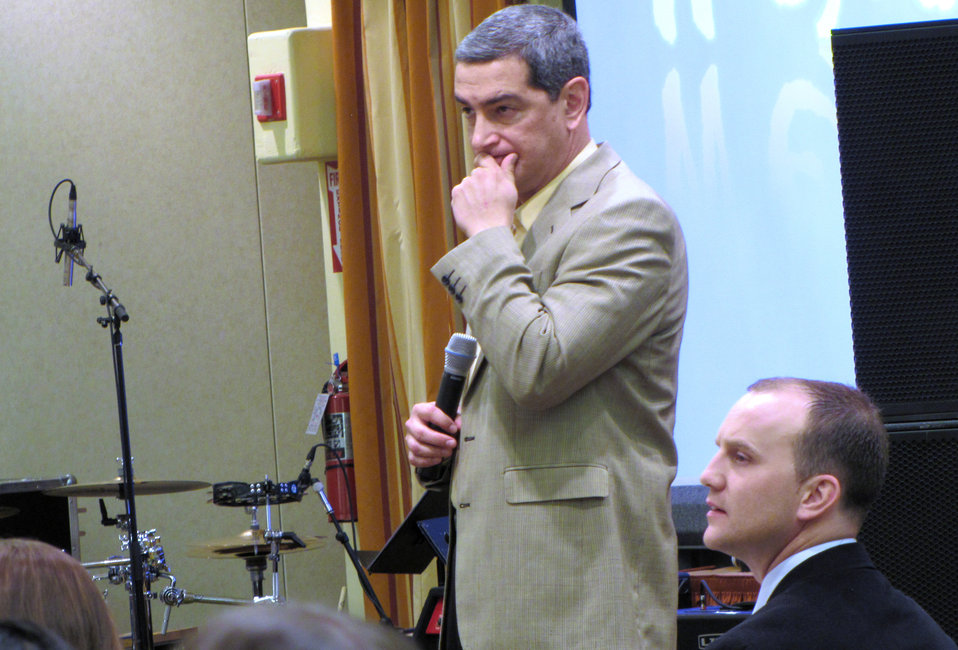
Deployers, families tackle issues in Phoenix

Maj. Gen. Kelly McKeague, the assistant to the chairman of the Joint Chiefs of Staff for National Guard Matters, and Chaplain (Capt.) Kevin Rash listen to questions from the crowd April 15, 2011, during the western region Yellow Ribbon Program event Phoenix. General McKeague spoke to the group about deployment issues and their profession as military members.